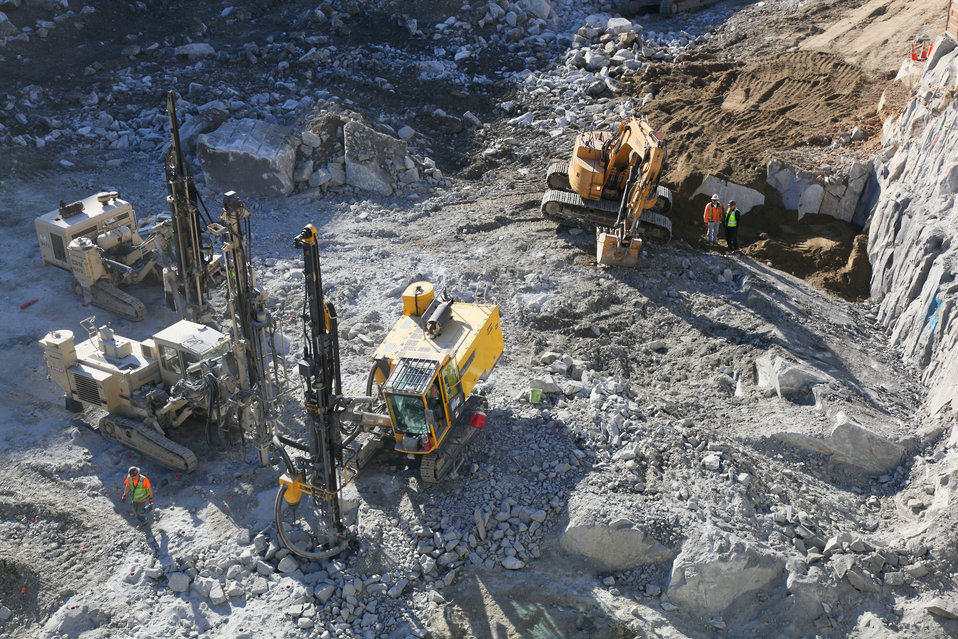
Rock drilling at the spillway at the Folsom Dam

Rock drilling continues at the excavation site for the Folsom Dam auxiliary spillway in Folsom, Calif. on Jan. 13, 2012. The spillway will allow Folsom Dam to release water sooner and more safely. The project is part of the Folsom Dam Joint Federal Project, a joint effort of the U.S. Army Corps of Engineers Sacramento District, the U.S. Bureau of Reclamation, the Central Valley Flood Protection Board and the Sacramento Area Flood Control Agency to improve the safety of the dam and reduce flood risk for the greater Sacramento area.